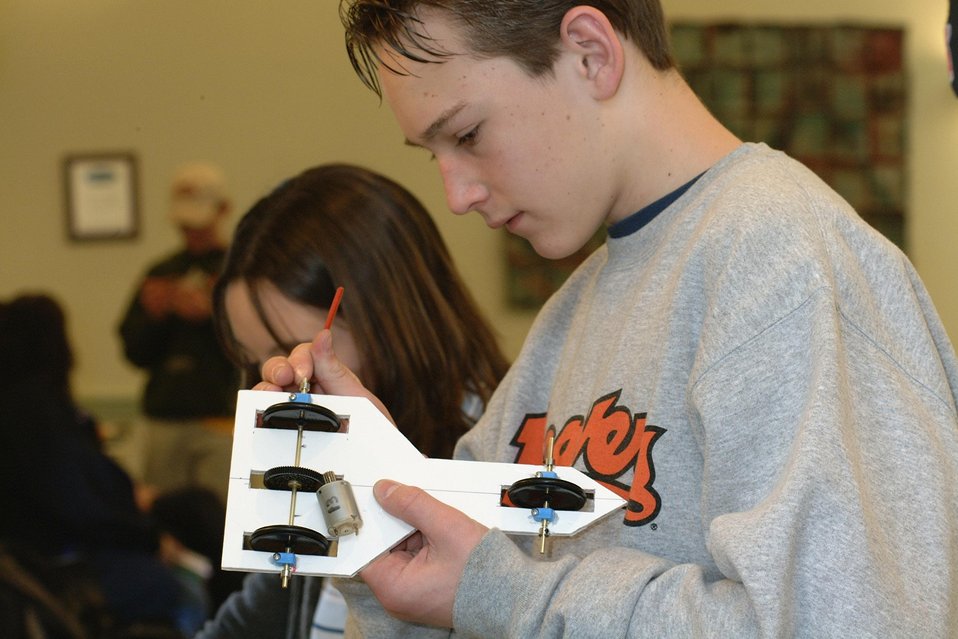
STUDENT FROM MEMORIAL MIDDLE SCHOOL, ALBANY, OR, EXAMINING THE WHEELS OF MODEL SOLAR CAR ENTRY.

THE DEPARTMENT OF ENERGY SPONSORED THE FIRST NATIONAL MIDDLE SCHOOL SCIENCE BOWL ON MARCH 21-24, 2002 IN WASHINGTON, DC AT DOE HEADQUARTERS FORRESTAL BUILDING. ON MARCH 23RD THE COMPETITION INCLUDED A MODEL SOLAR CAR RACE HELD AT THE NATIONAL 4-H CONFERENCE CENTER, CHEVY CHASE, MD. THE MODEL CARS WERE DESIGNED AND CONSTRUCTED BY THE TEAM MEMBERS.